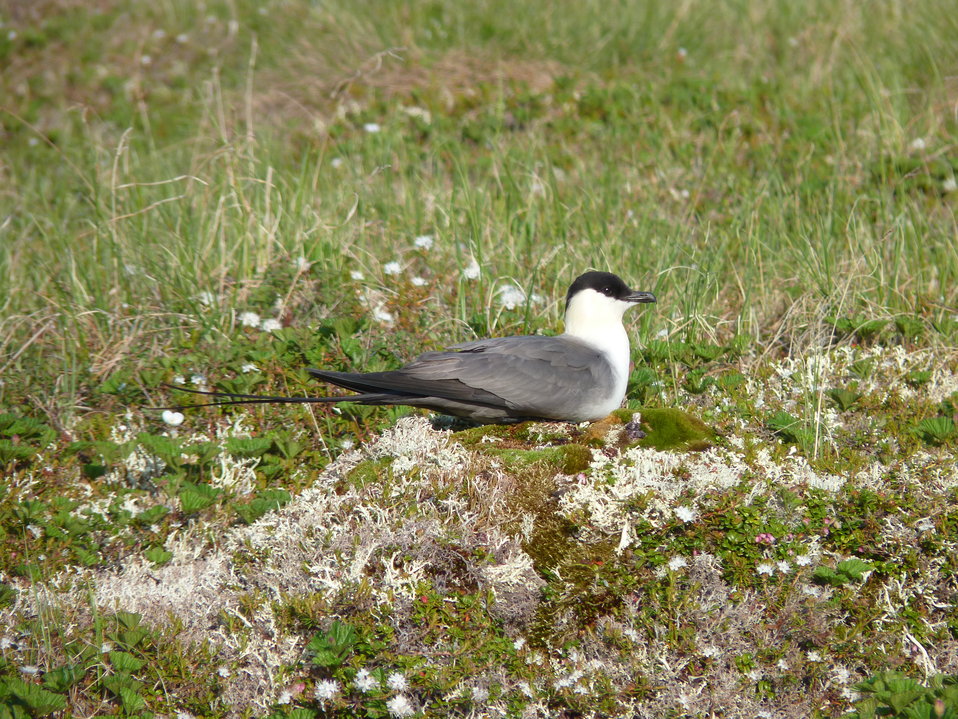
Long-tailed Jaeger

Andreafsky wilderness, Yukon Delta National Wildlife Refuge